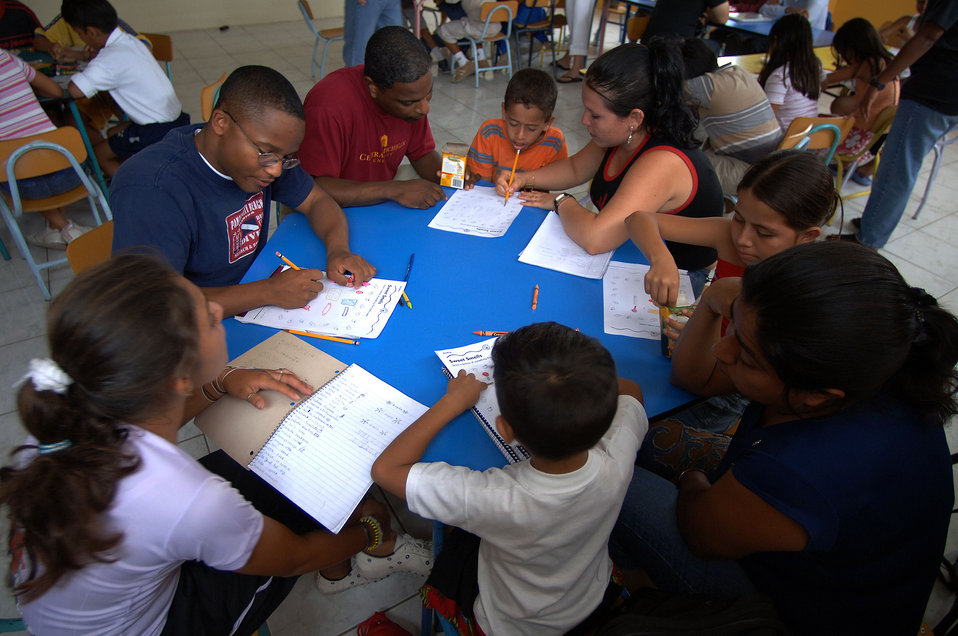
Airmen teach children English, show compassion

MANTA, Ecuador -- (From left) Senior Airman Darious Harper and Senior Master Sgt. Michael Anderson help children with their homework. Airman Darius is an information manager at the nearby base, and Sergeant Anderson is the first sergeant.